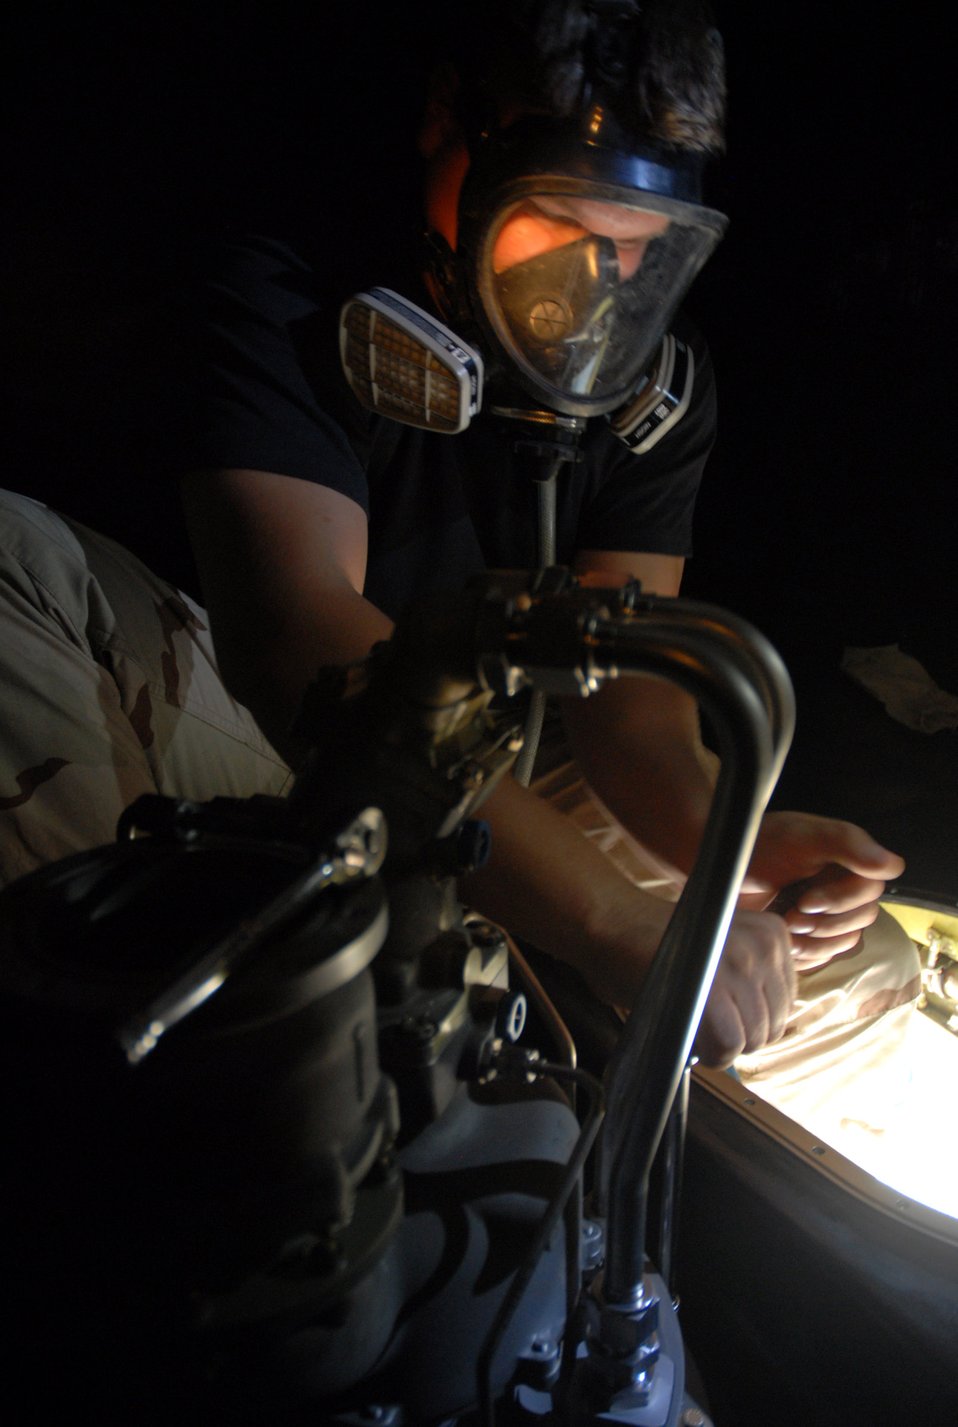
Pump it up: Airman goes with the flow

Wearing protective equipment in case of fuel fumes, Airman 1st Class Shaun Carrig installs an air refueling pump in the number three forward body fuel tank of a KC-135 Stratotanker Nov. 17 in Southwest Asia. The new fuel pump with ensure better gas flow for the aircraft. Airman Carrig is a fuel systems journeyman with the 379th Expeditionary Aircraft Maintenance Squadron and is deployed from Grand Forks Air Force Base, N.D.